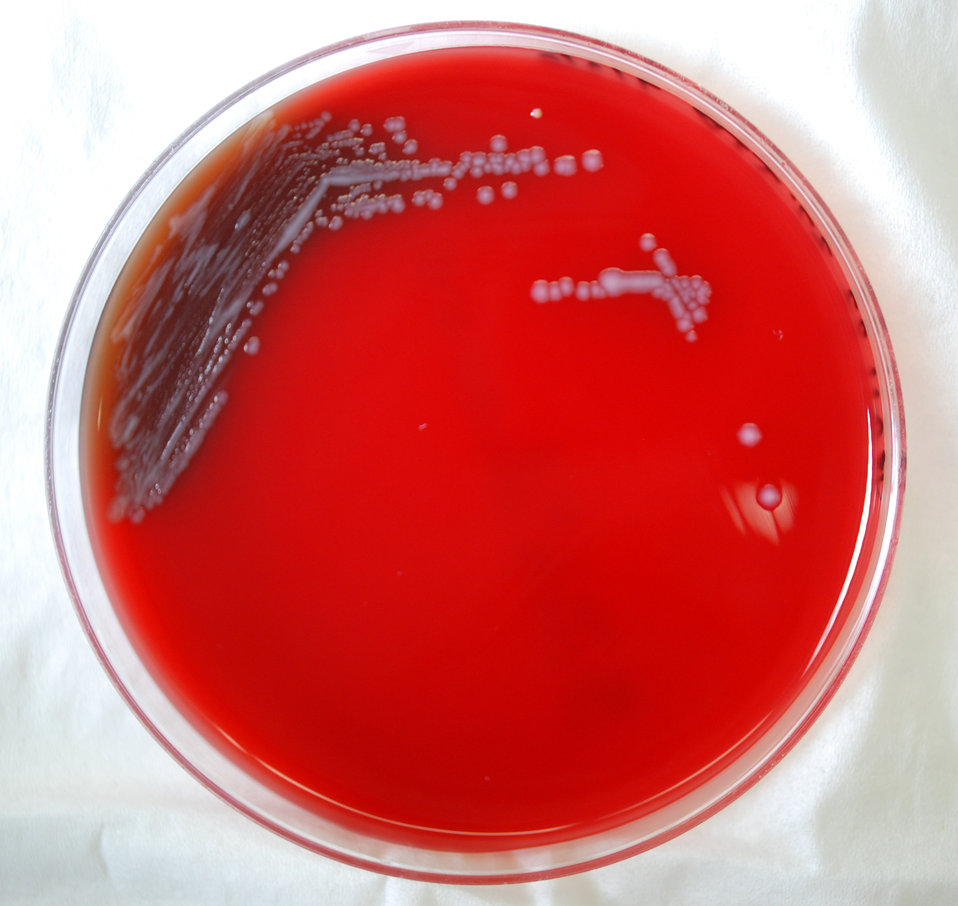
This photograph depicts the colonial morphology displayed by Gram-negative Yersinia pestis bacteria, which was grown on a medium of sheep's blood agar (SBA), for a 48 hour time period, at a temperature of 37�C. See PHIL 12251 for a closer view of these bacterial colonies.Classification: